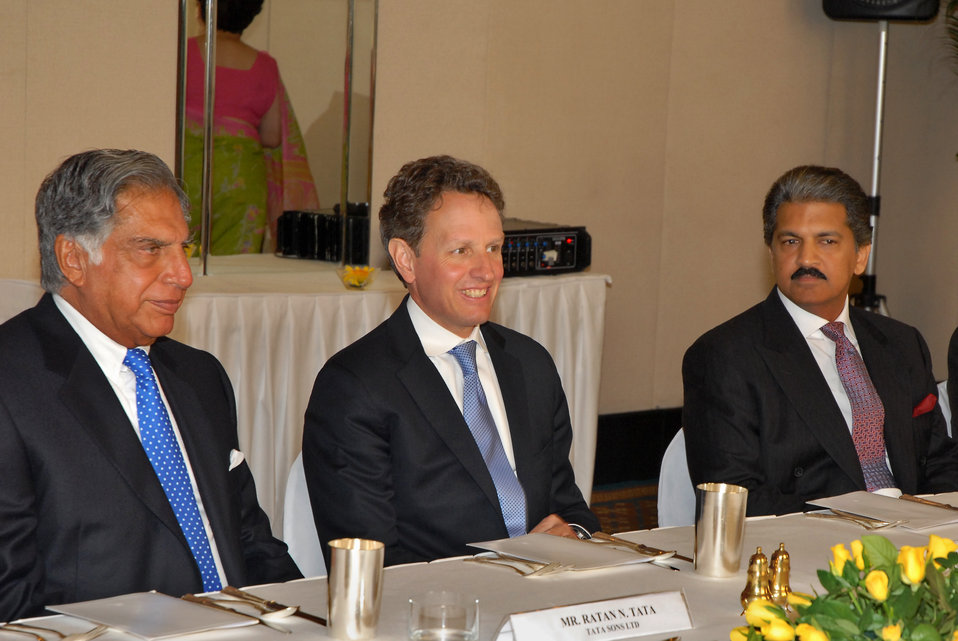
Secretary Geithner in India, 4/7/10

On April 7, 2010, Secretary Geithner (C) attended a working lunch with Indian business leaders, hosted by Chairman of Tata Sons Ratan Tata (L), and Vice Chairman and Managing Director of Mahindra & Mahindra Anand Mahindra (R). They discussed opportunities for job growth in India and the U.S.